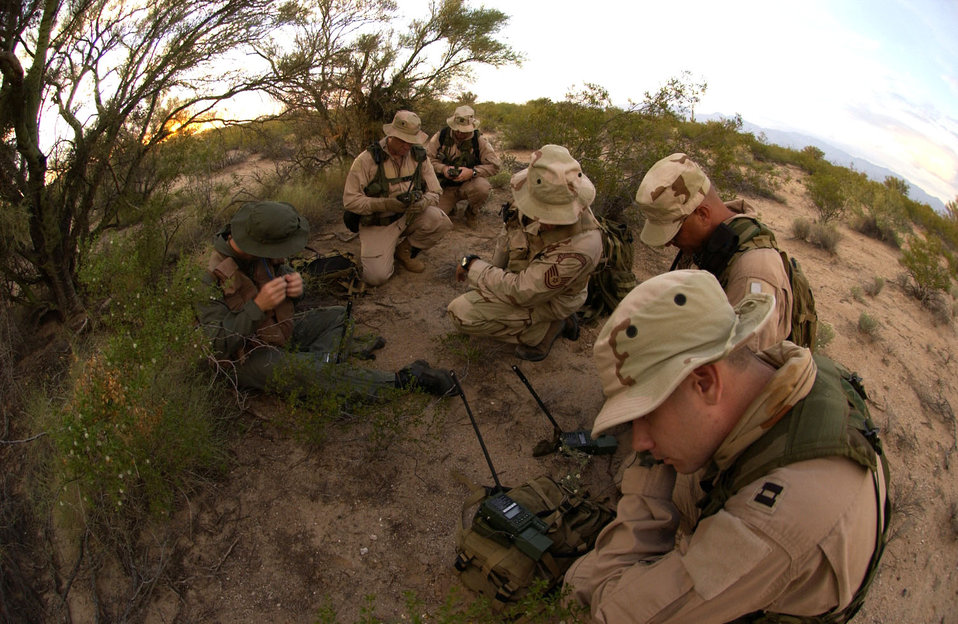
Surviving Arizona

DAVIS-MONTHAN AIR FORCE BASE, Ariz. -- Tech. Sgt. Travis Butikofer demonstrates the proper way to turn on and set up a Hook-112 radio during a combat-survival training refresher course here recently. Sergeant Butikofer is a survival evasion resistance and escape specialist with the 563rd Operations Support Squadron.